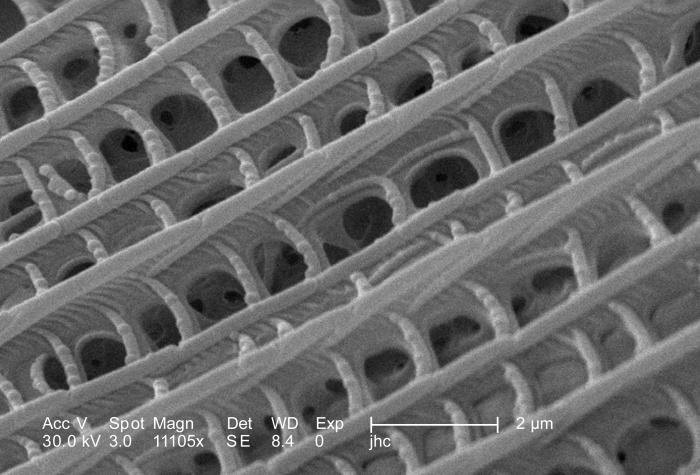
Under this highly magnified scanning electron micrographic (SEM) view, some of the wondrous ultrastructural shapes found on the surface of an unidentified white moth were revealed. Here, one is able to appreciate the diaphanous construct of a single scale, which was found on the insect's exoskeletal surface. See PHIL 9841 through 9851 for other views of the moth's scales. At this magnification of 11105X, the light-weight structure of the scale was made quite evident, which acted to reduce the moth's overall weight, thereby, further facilitating the insect's ability to fly.This moth, discovered deceased in the Decatur, Georgia suburbs, was a member of the Phylum Arthropoda, Order Lepidoptera.